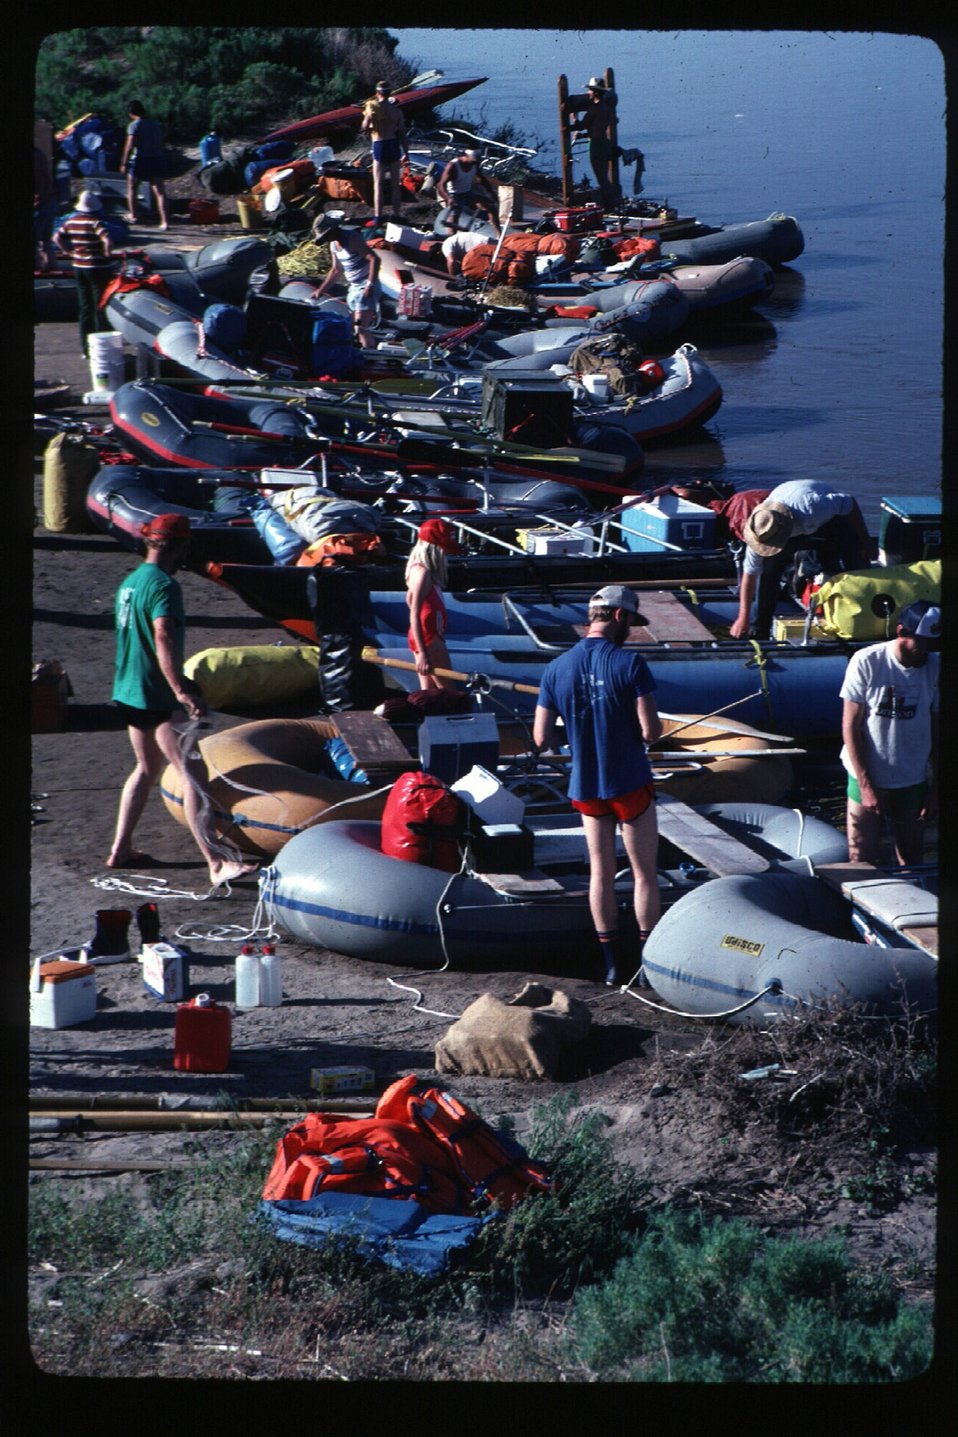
Owyhee River put-in Owyhee Field Office LSRD Lower Snake River District